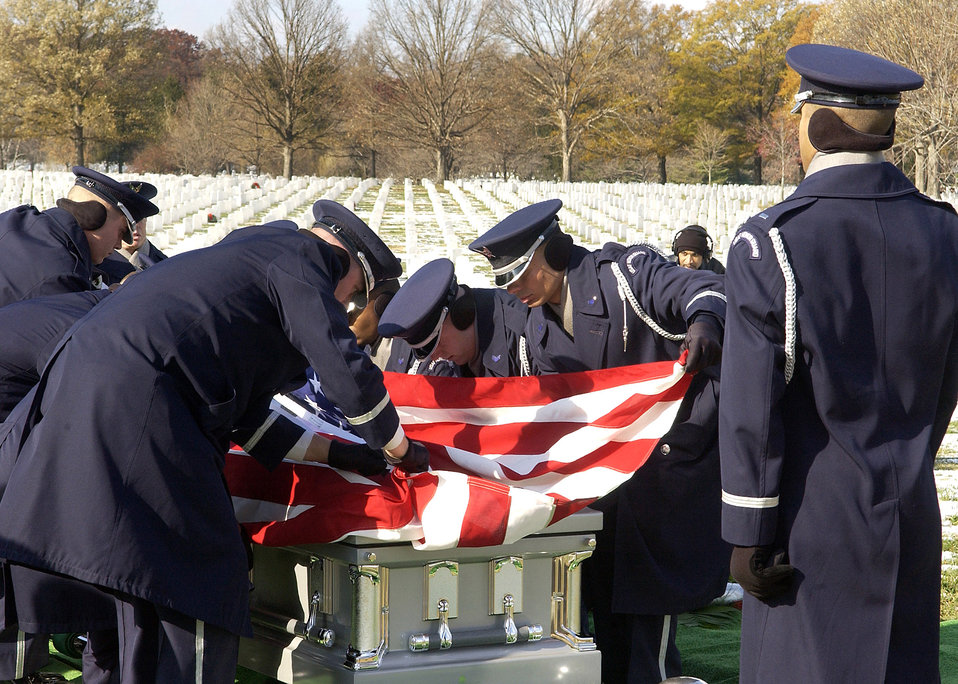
Paying your final respects

ARLINGTON NATIONAL CEMETERY, Va. (AFPN) -- U.S. Air Force Honor Guard pallbearers place the remains of Col. Wilfred B. Crutchfield and Lt. Col. Ivan E. O'Dell at their gravesite in Arlington National Cemetery. The remains were laid to rest with full military honors here, Dec. 7. The Airmen died in a plane crash in 1968 but their remains were not discovered until October 2004.